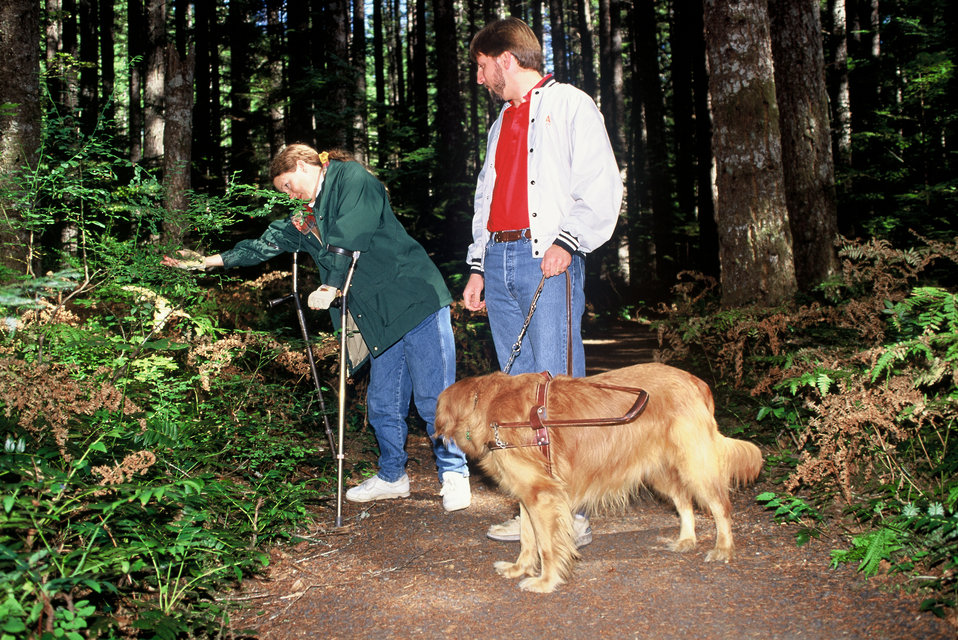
Physically impaired visitors walk along the Lewis River Nature Trail in the Gifford Pinchot National Forest in Washington on May 1995.